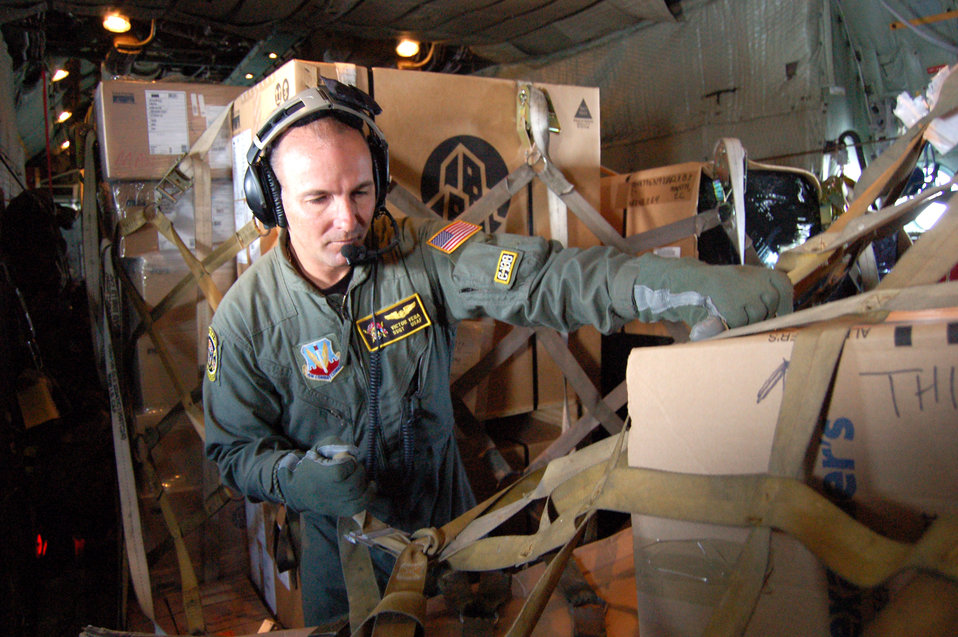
Puerto Rico Airmen support two wars

Staff Sgt. Victor Vega checks the netting on a cargo pallet aboard a C-130 Hercules bound for Forward Operating Location Manta, Ecuador, Dec. 12. The loadmaster was one of the first members of the 156th Airlift Wing to deploy their cargo planes to Afghanistan.